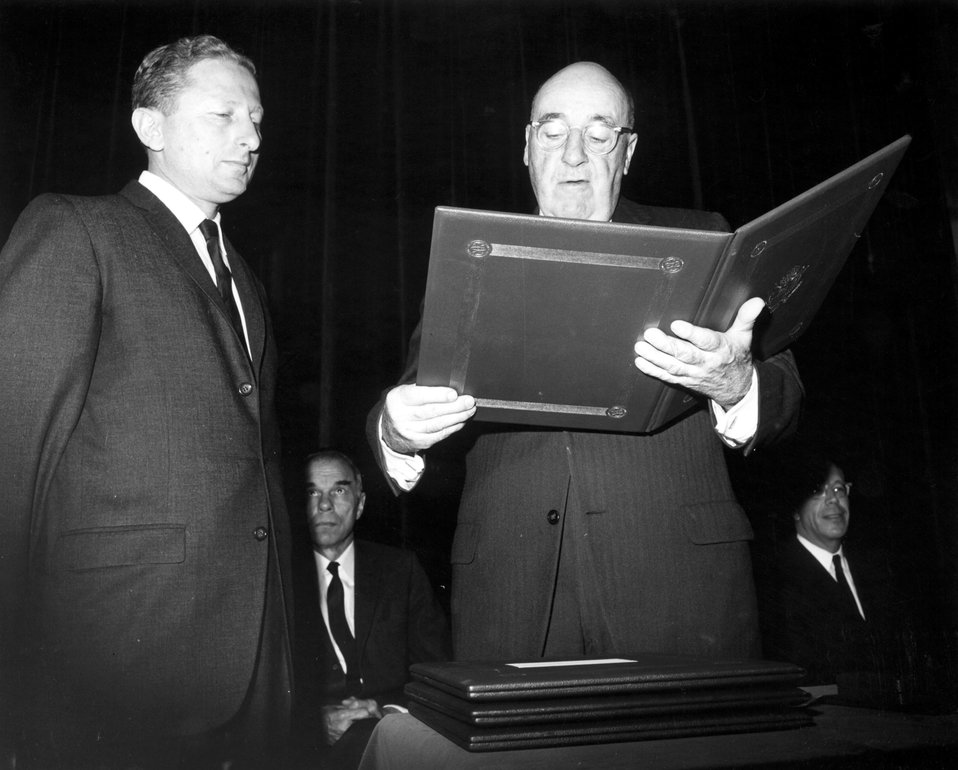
Dr. Wilson, Dr. Rosen. ERNEST O. LAWRENCE AWARD - 1963. National Academy of Sciences, April 25, 1963.